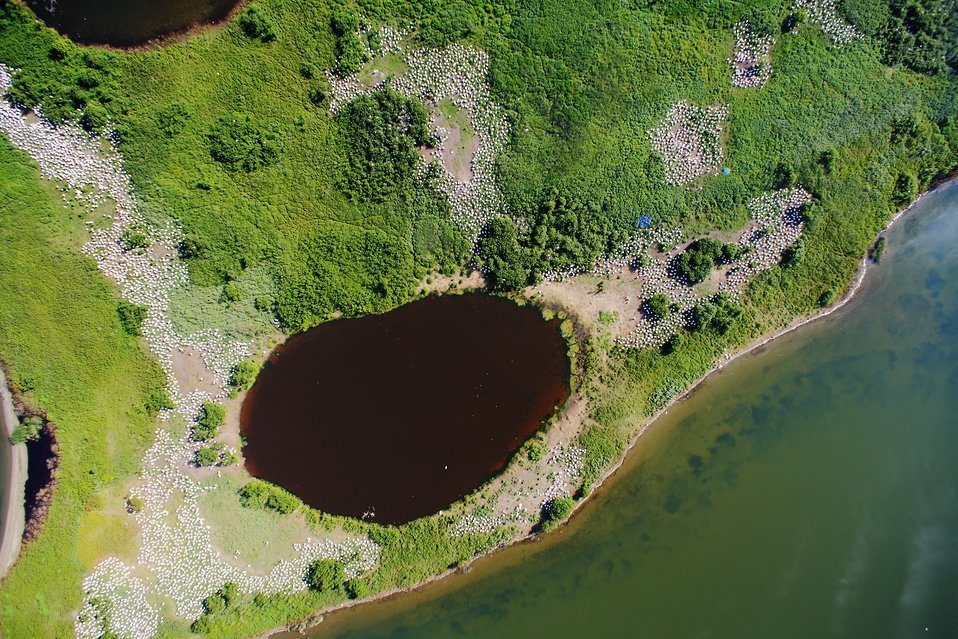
Larger nesting island at Chase Lake NWR

Aerial view of larger nesting island showing large flocks of pelicans. Over 10,200 pelicans nested at Chase Lake NWR in North Dakota in 2010.